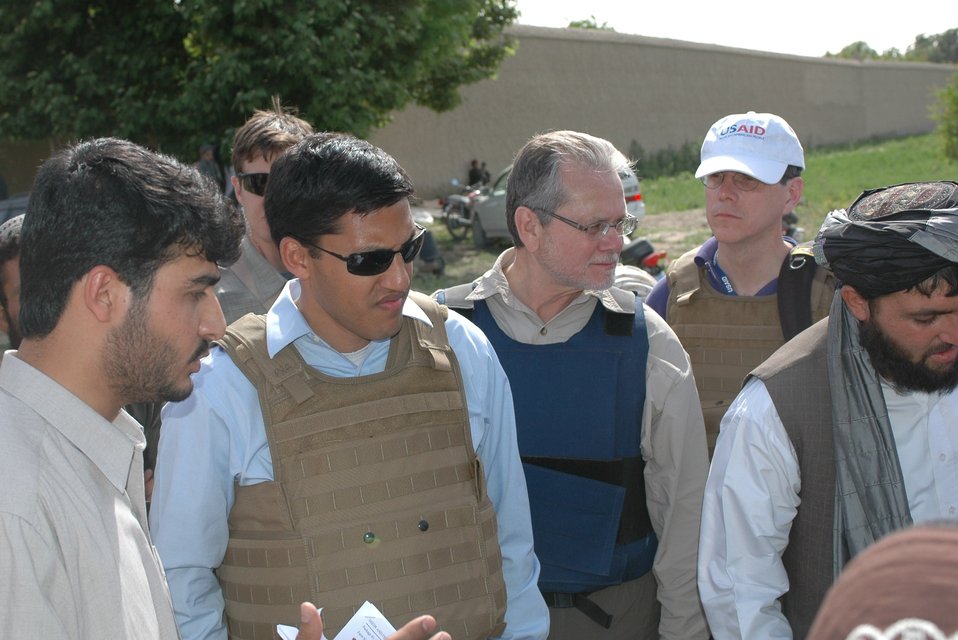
Dr Shah Visits Argandab April 10, 2010